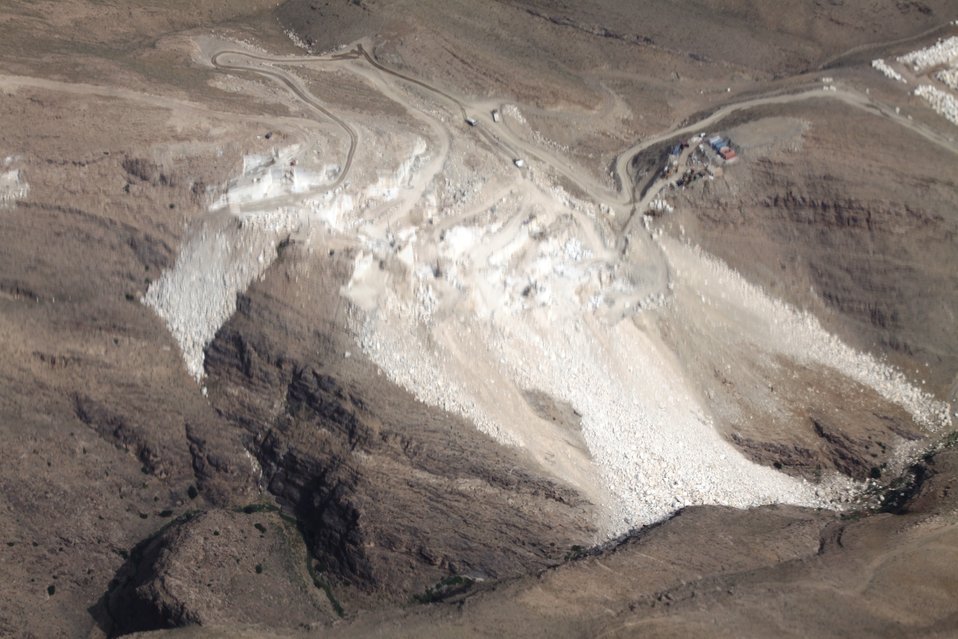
100525 Hirat Marble Conference 026